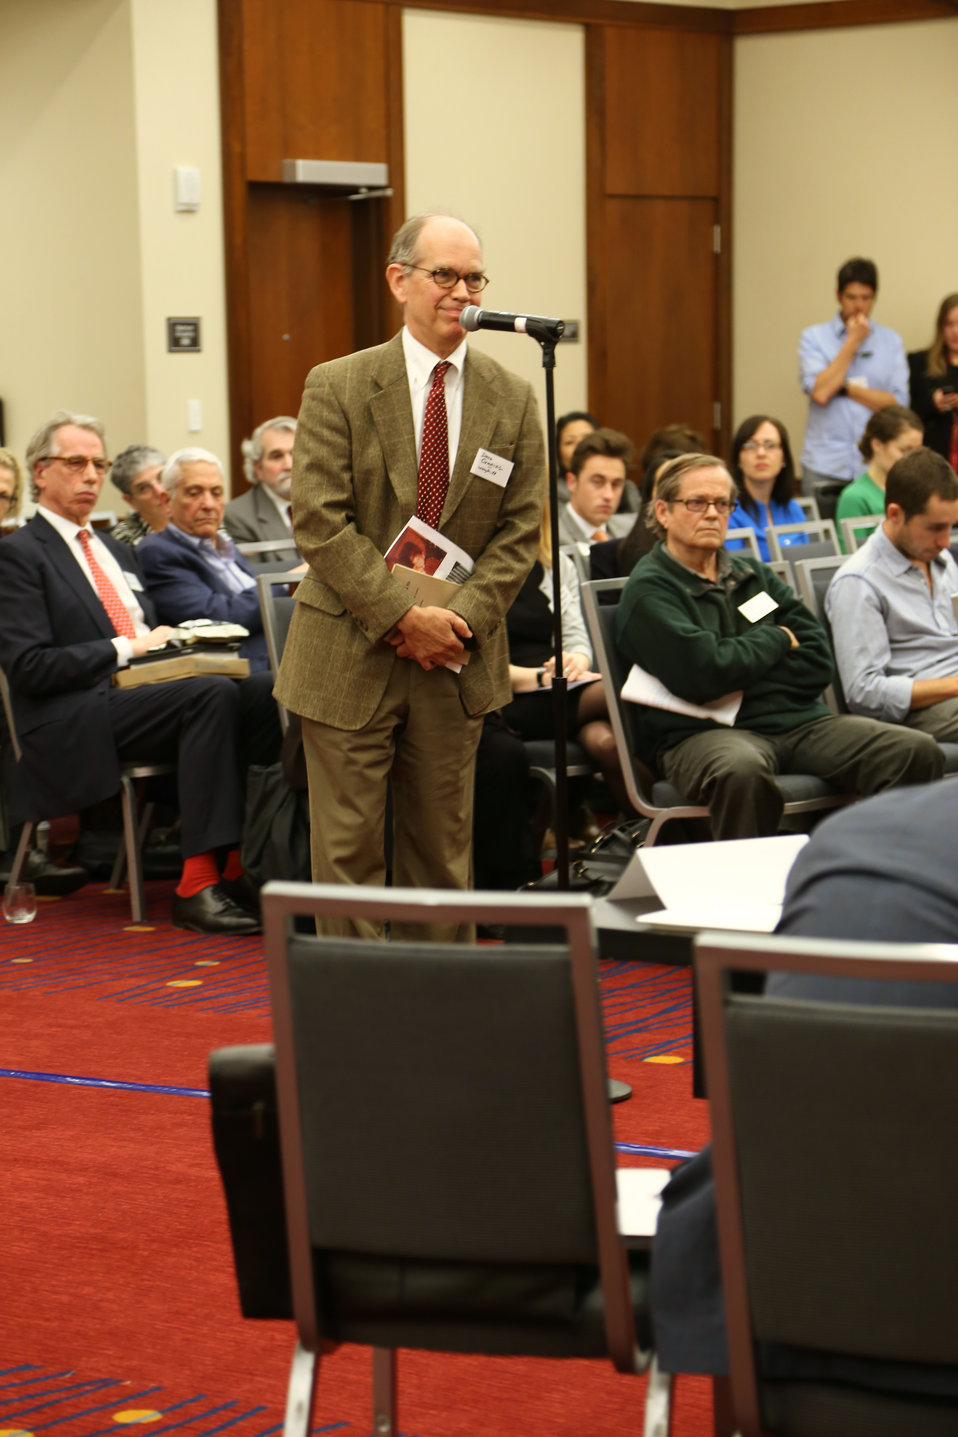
Wildlife Trafficking Advisory Council Meeting March 20, 2014